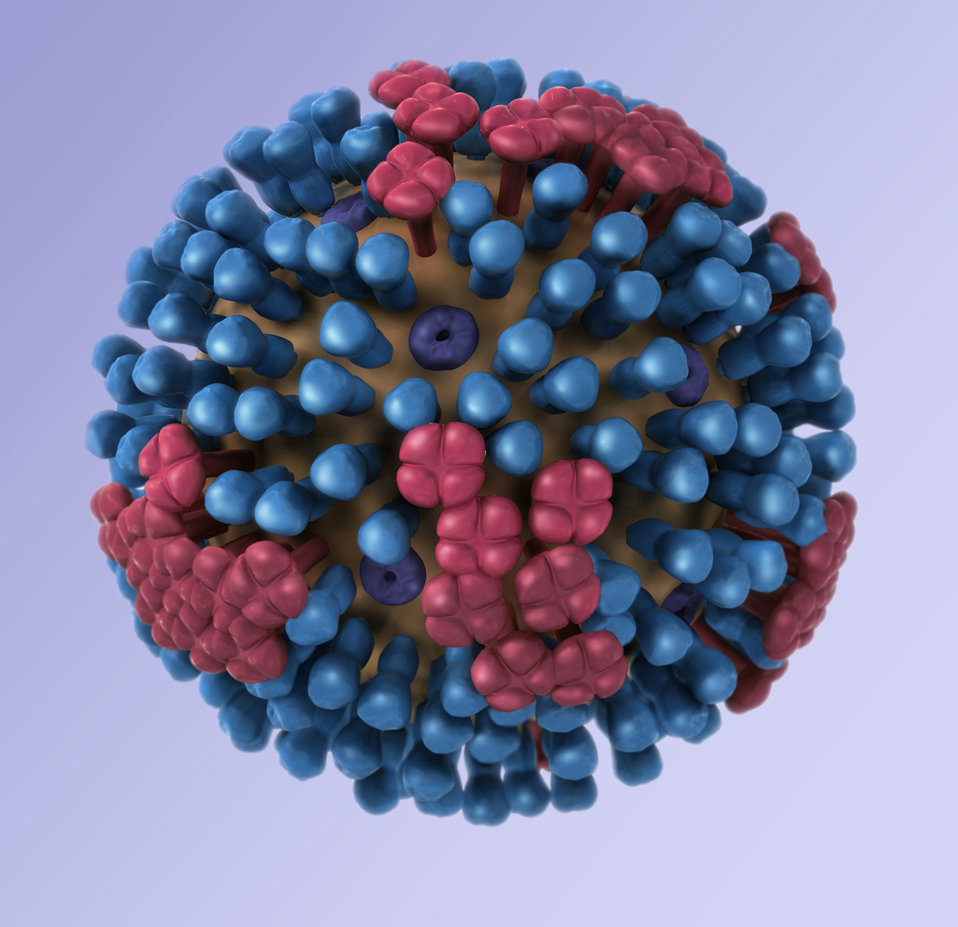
This illustration provides a 3D graphical representation of a generic influenza virion's ultrastructure, and is not specific to a seasonal, avian or 2009 H1N1 virus. See PHIL 11824 for a view of this virus in which a portion of the virion's protein coat, or 'capsid', has been cut away, revealing its inner nucleic acid core proteins, as well as a key identifying the organism's protein constituents.